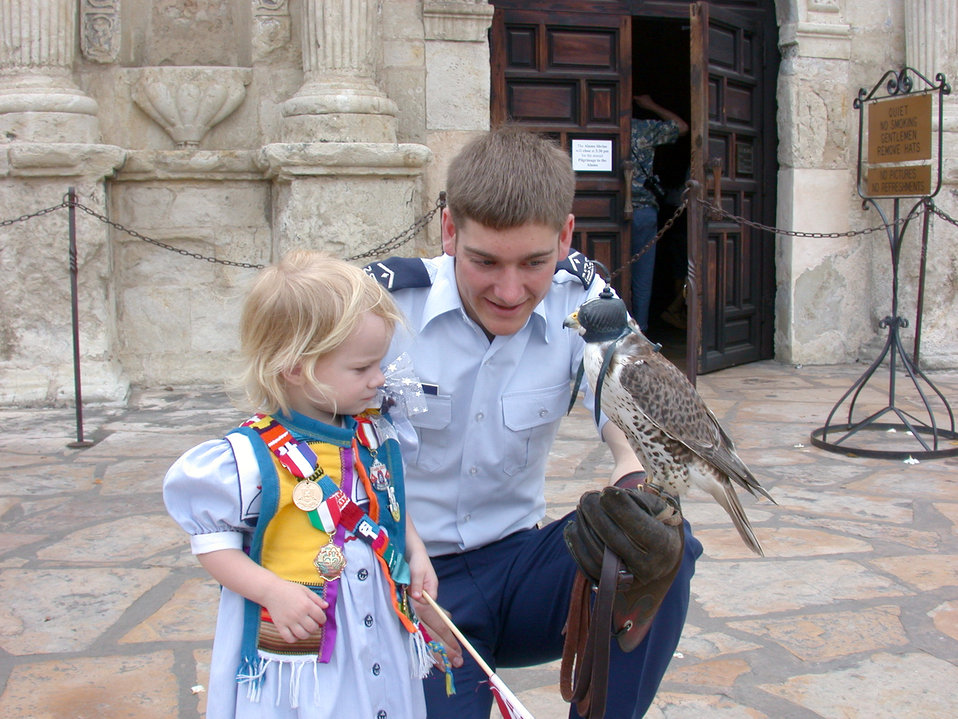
Falcon Fiesta

SAN ANTONIO -- Cadet 3rd Class Robert Kurpiel introduces 2-year-old Reagan Laine to Echo, a prairie falcon, outside the Alamo here April 19. Cadet Kurpiel and Echo, both from the U.S. Air Force Academy, Colo., visited San Antonio to take part in the city's annual Fiesta celebration and teach people about the academy and its falcon mascots.